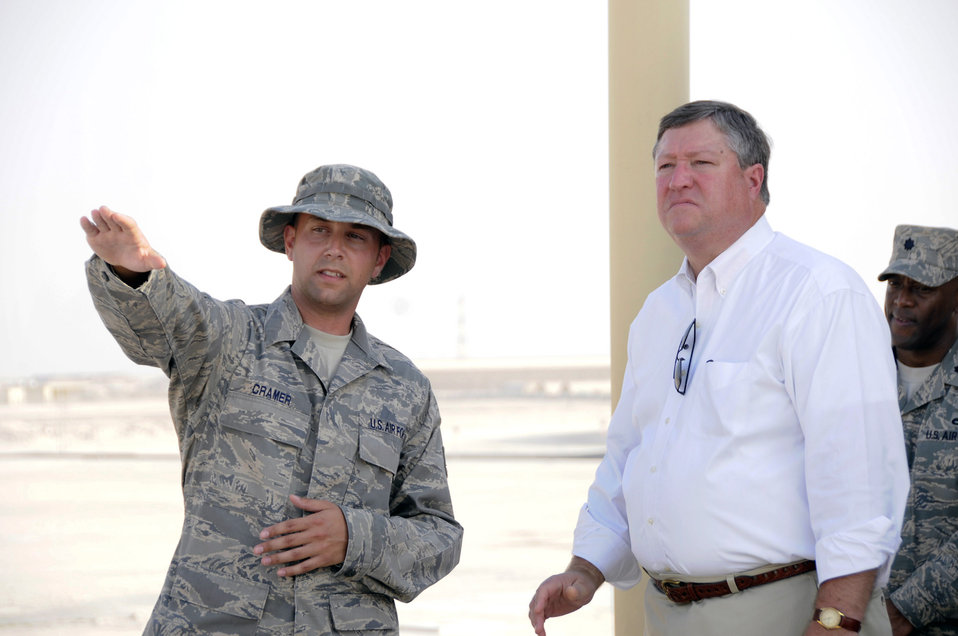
Secretary visits Airmen in Southwest Asia

Staff Sgt. Matthew Cramer points out to Secretary of the Air Force Michael B. Donley different fuels areas and describes how fuels procedures are transitioning from expeditionary to enduring operations at the 379th Air Expeditionary Wing Oct. 11 at an air base in Southwest Asia. Sergeant Cramer is assigned to the 379th Expeditionary Logistics Readiness Squadron.